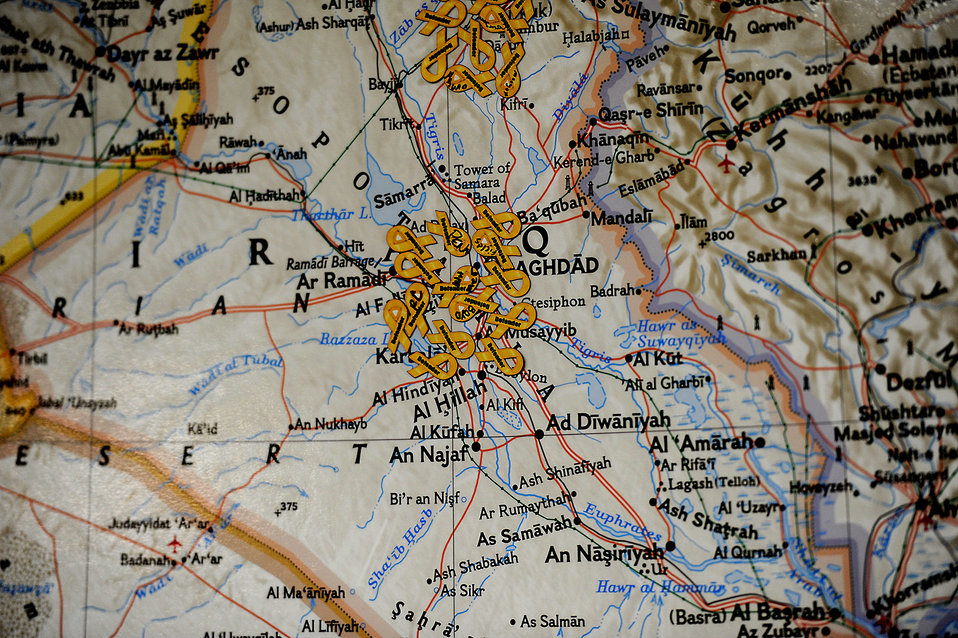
Langley SFS welcomes home deployed defenders

Yellow ribbons on a map represent where members from the 633rd Security Forces Squadron, which is at Joint Base Langley-Eustis, Va., are deployed Nov. 2, 2011. Soon, Staff Sgt. John Duncan, Senior Airmen Kristian Robles Cruz and Amber Boyd, and Airman Basic Joseph Wesley will position their ribbons back stateside after returning from their recent deployment to Joint Base Balad, Iraq.